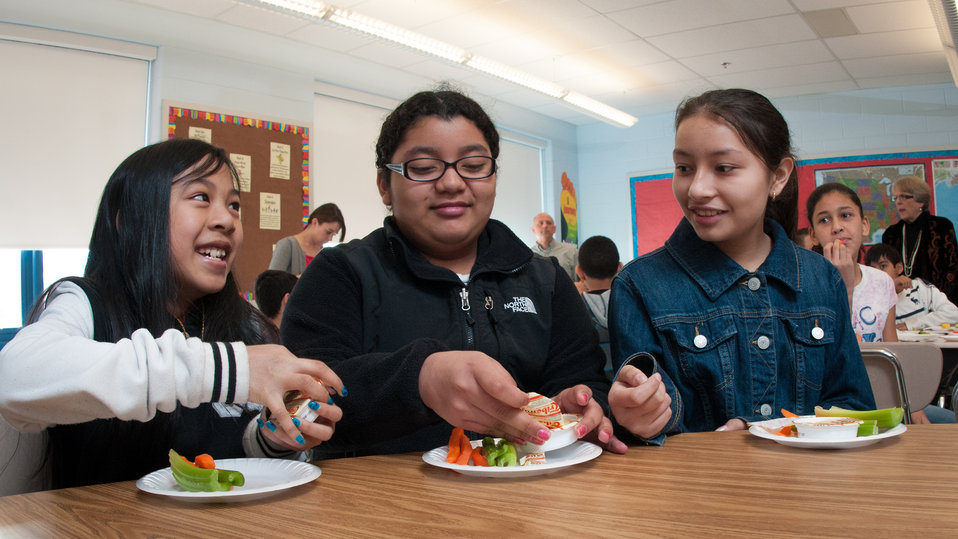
Harmony Hills Elementary School 5th grade girls, in Silver Spring, MD share their tasting experience and show how they eat hummus, to Dalry Primary School students, in North Ayershire, Scotland, United Kingdom, using a live overseas video connection, during the inaugural International School Meals Day (ISMD) at Harmony Hills Elementary School in Silver Spring, MD, on Friday, March 8, 2013. The ISMD has 14 classrooms (grades 3-8) in the U.S. connected with 14 classrooms in Scotland. USDA plans to expand the initiative to include partnerships with additional countries in future years. USDA's Food and Nutrition Service oversees the administration of 15 nutrition assistance programs that work in concert to form a national safety net against hunger. Learn more by visiting www.fns.usda.gov and twitter @USDANutrition.